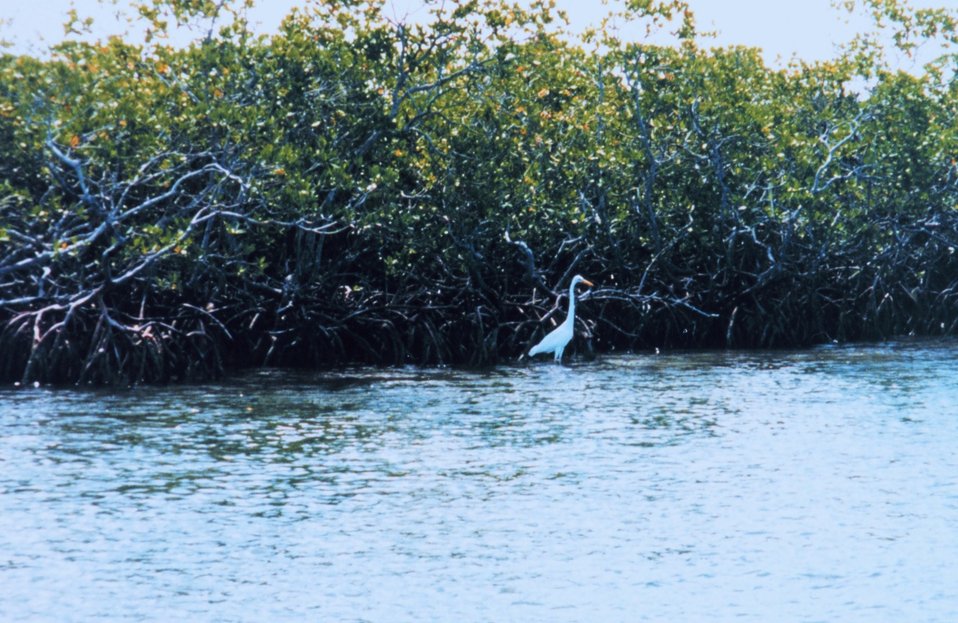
Typical red mangrove with prop roots - characteristic of high salinity area